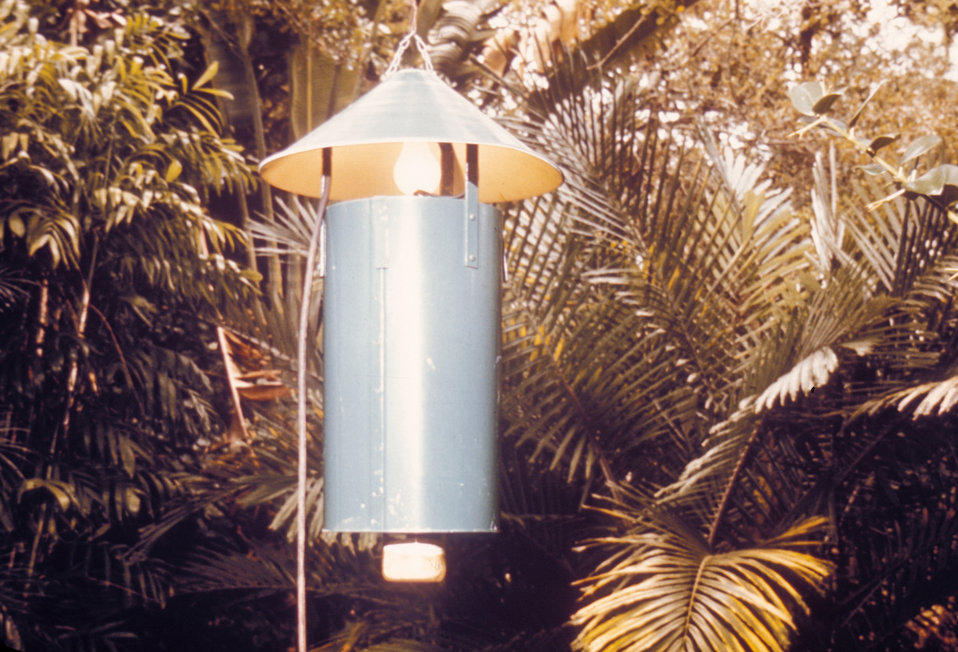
This is a New Jersey light trap used for trapping mosquitoes when conducting field studies.